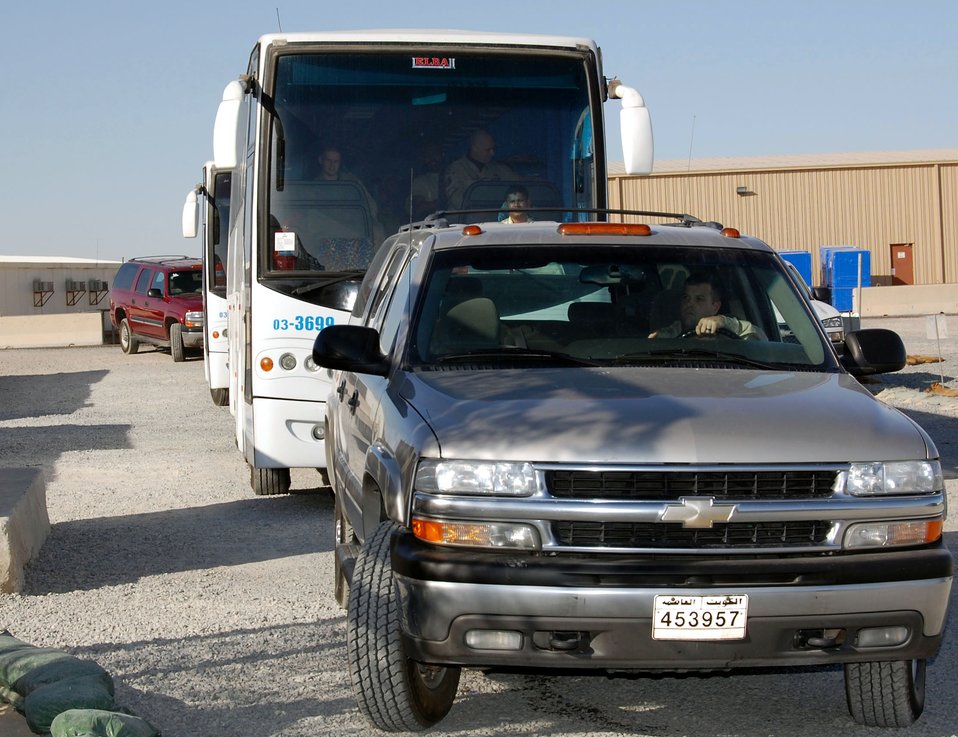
Deployed security forces SET to go

Staff Sgt. Richard Remington waits for a signal from his team to pull out and start a escort detail Nov. 27 in Southwest Asia. Sergeant Remington a 386th Expeditionary Security Forces Squadron security escort team leader is from Moody Air Force Base, Ga.